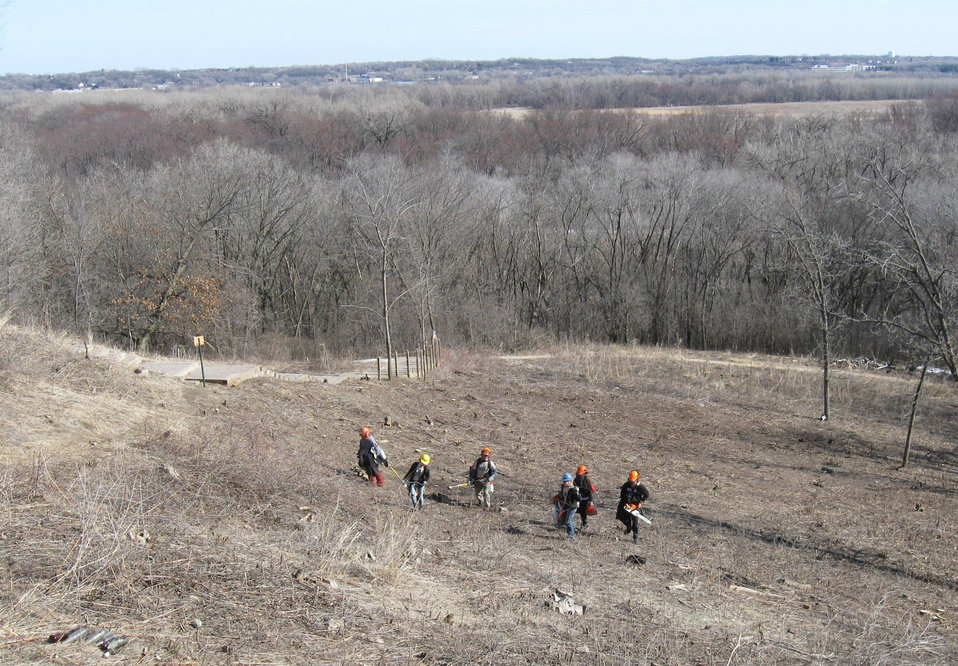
Tree free

After: The crew has removed the trees and brush along the steps, on the left.